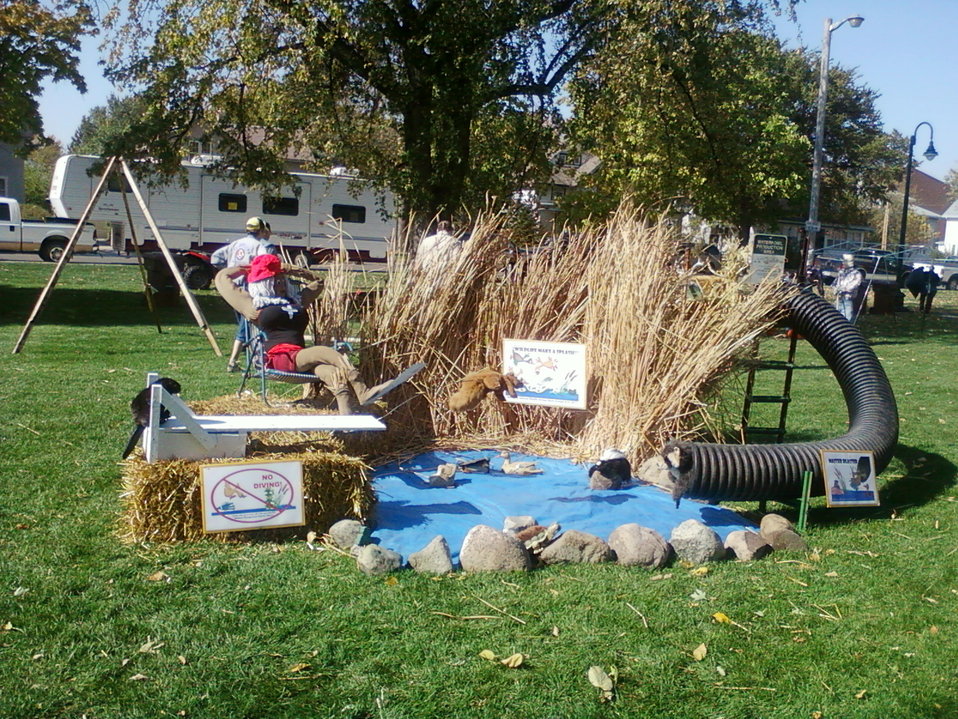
2011 Scarecrow Contest Huron, SD

The Huron WMD's Scarecrow display, we won first place!!!!!